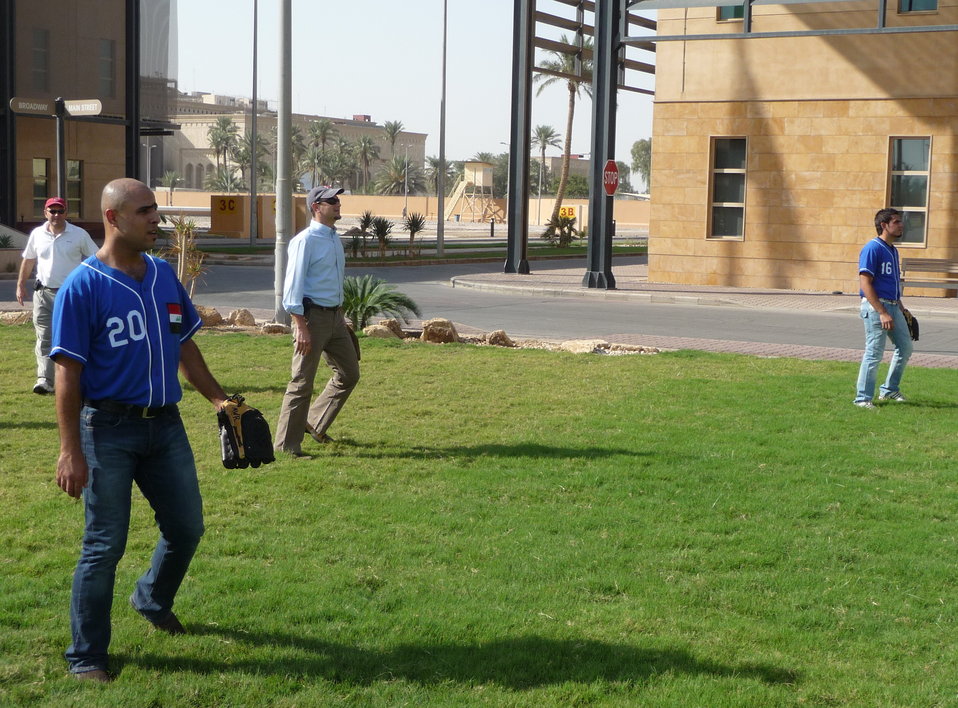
Embassy Workers Play Baseball With Iraqi National Team

Dan Gedacht of U.S. Embassy Baghdad plays baseball with the Iraqi national team at the Embassy grounds, Baghdad, Iraq, October 2009.